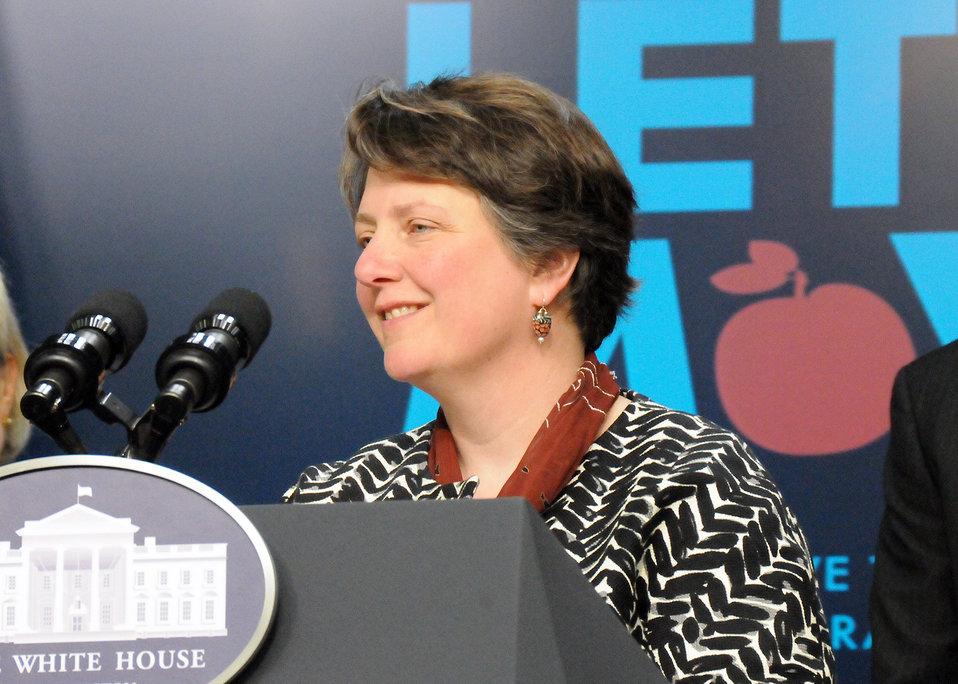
Agriculture Deputy Secretary Kathleen Merrigan responds to questions from the press during the Obesity Task Force press conference held at the Eisenhower Executive Office Building in Washington, D. C., on Tuesday, May 6, 2010. USDA photo 10di1354- 160